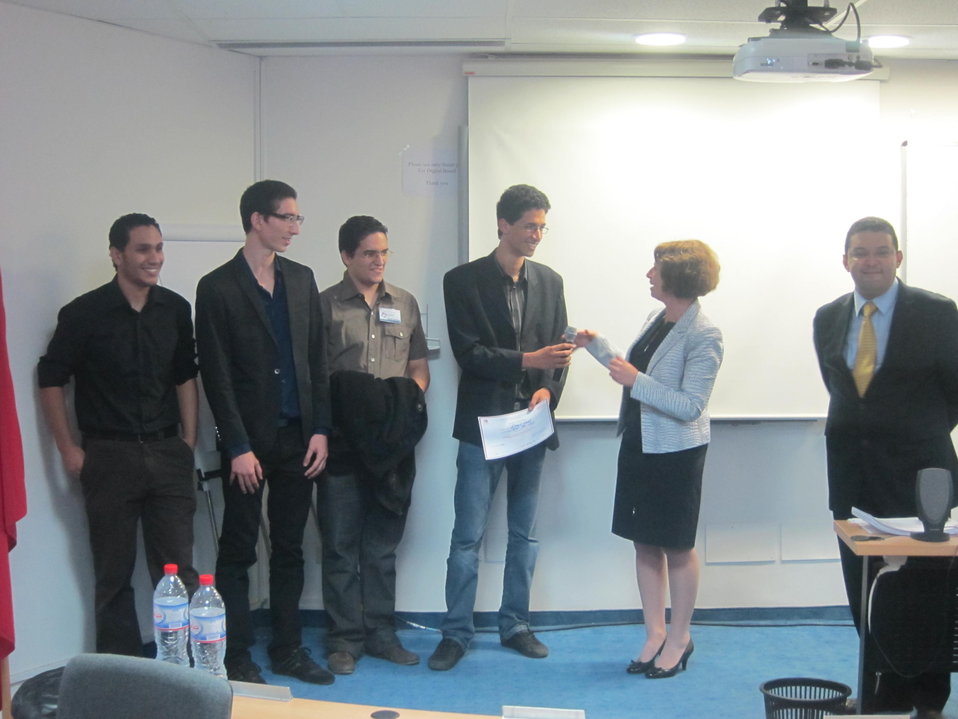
Special Representative Hariton Poses for a Photo With NextGen Corporation Founders

Special Representative for Commercial and Business Affairs Lorraine Hariton poses for a photo with founders of NextGen Corporation, led by Ahmed Nabli, in Tunis, Tunisia, on November 2, 2011.